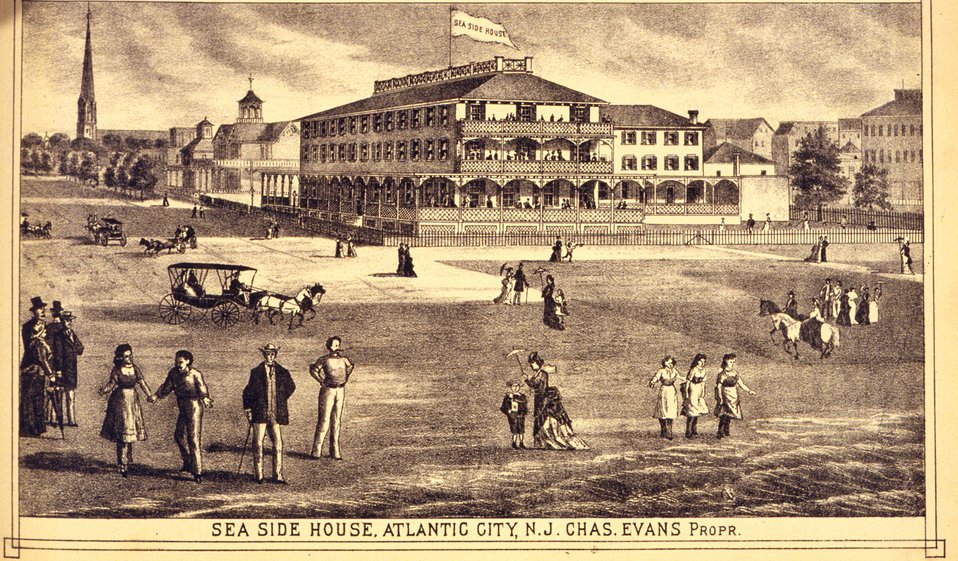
Seaside House, Atlantic City, N.J. P. 335. 'Historical and Biographical Atlas of the New Jersey Coast,' by T. F. Rose, 1878.